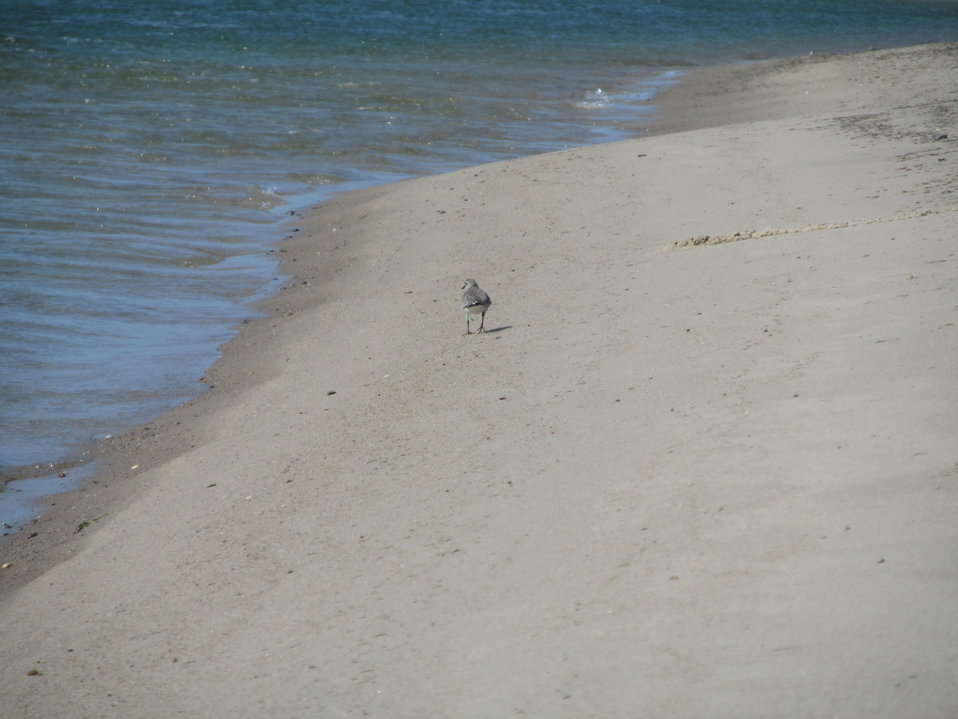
Red knot cannon netting in Cape Cod

A juvenile red knot is released after biologists outfitted it with a flag, metal band and geolocator. This knot was one of six captured this day at the north end of Nauset Beach.